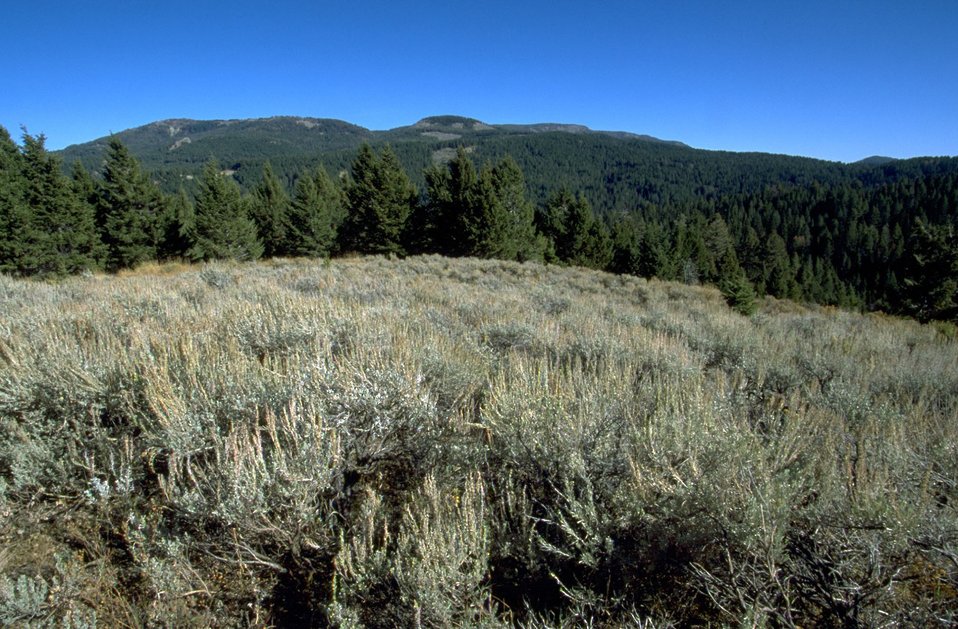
Sage Brush slope with forest in background